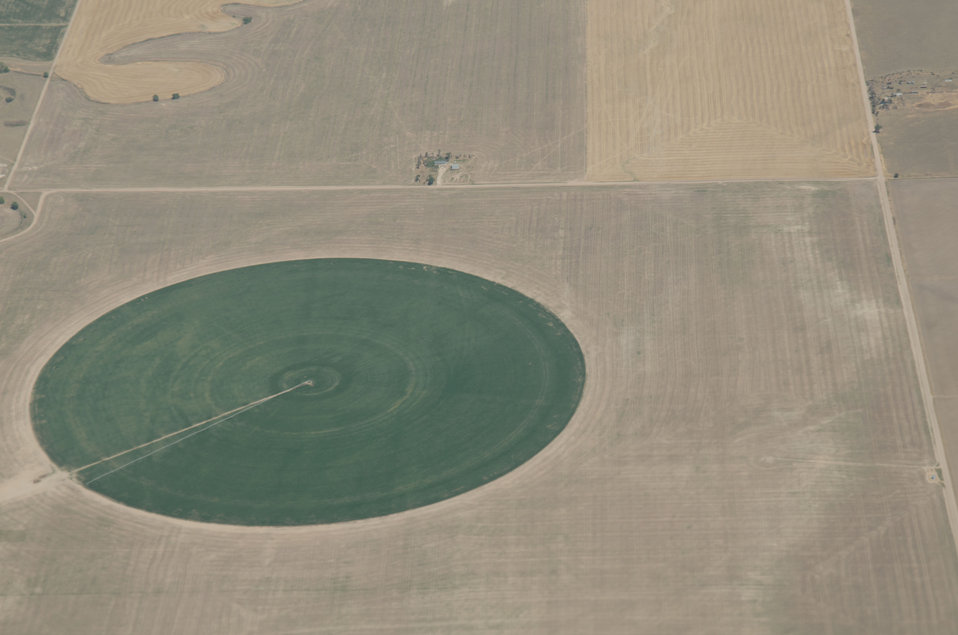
Aerial views of drought affected Colorado dryland crops near Byers, Colorado, on Saturday, July 21, 2012. Green areas are irrigated.